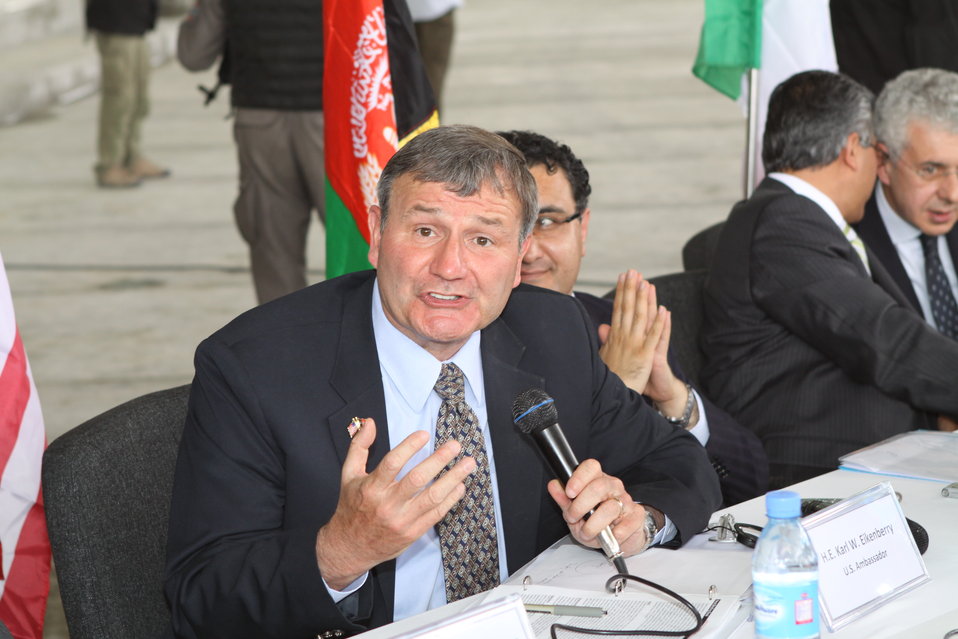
100525 Hirat Marble Conference 375